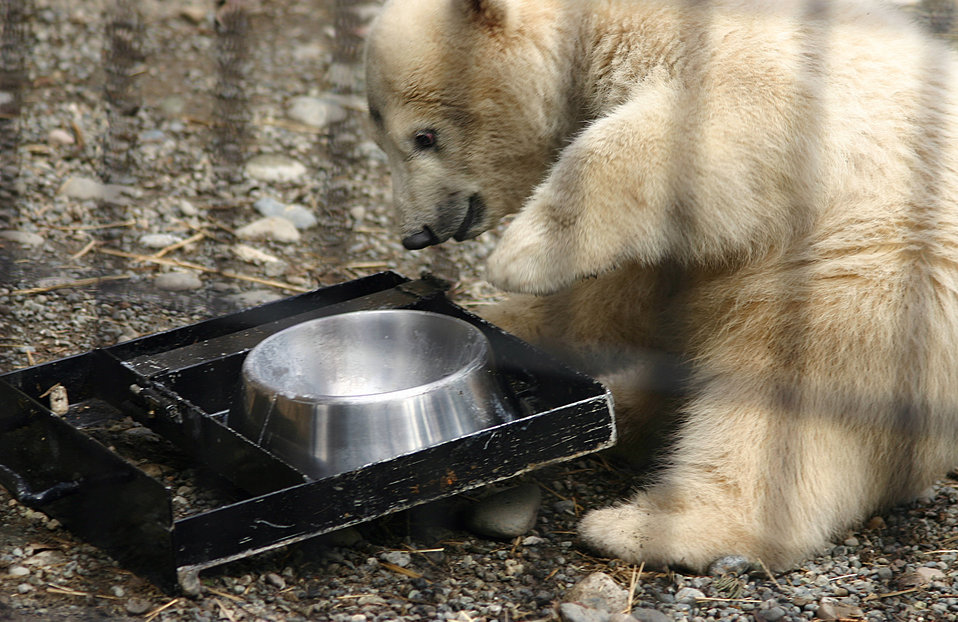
Kali wants more food

Kali at the Alaska Zoo.